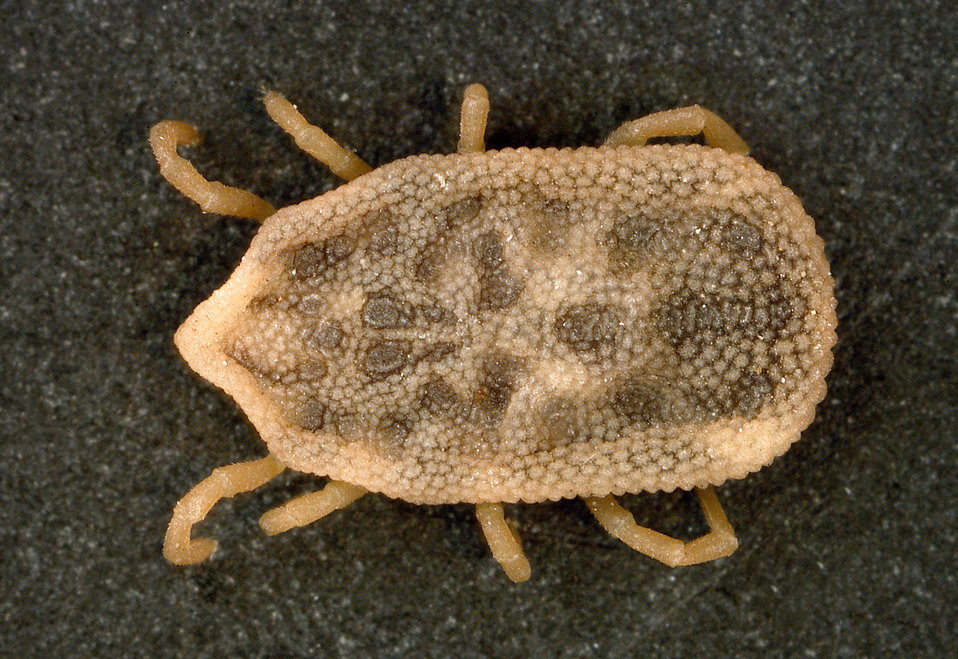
This is a dorsal view of the 'soft tick' Carios kelleyi, formerly Ornithodoros kelleyi, or the 'Bat Tick'.